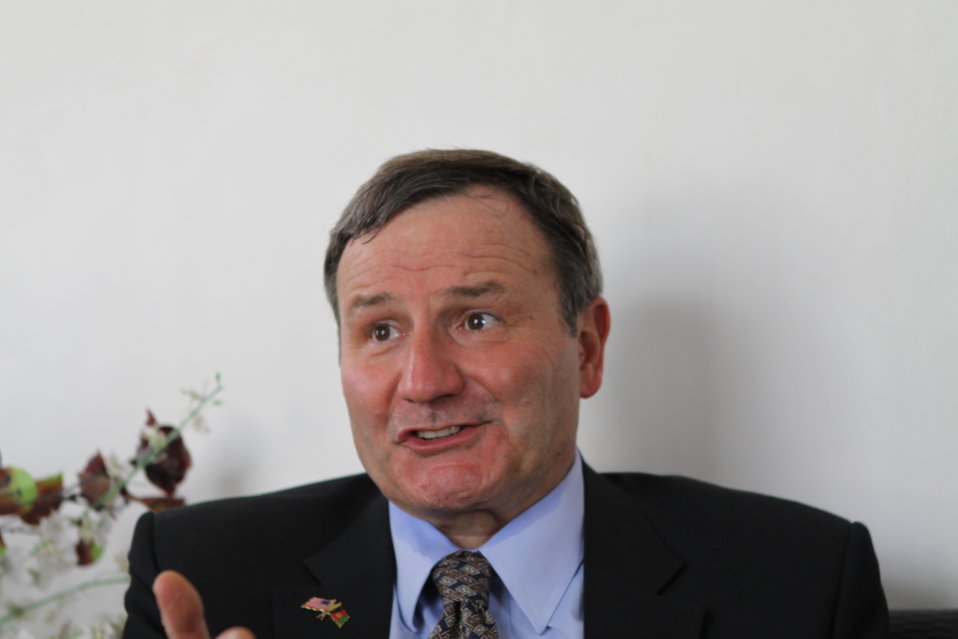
100525 Hirat Marble Conference 868